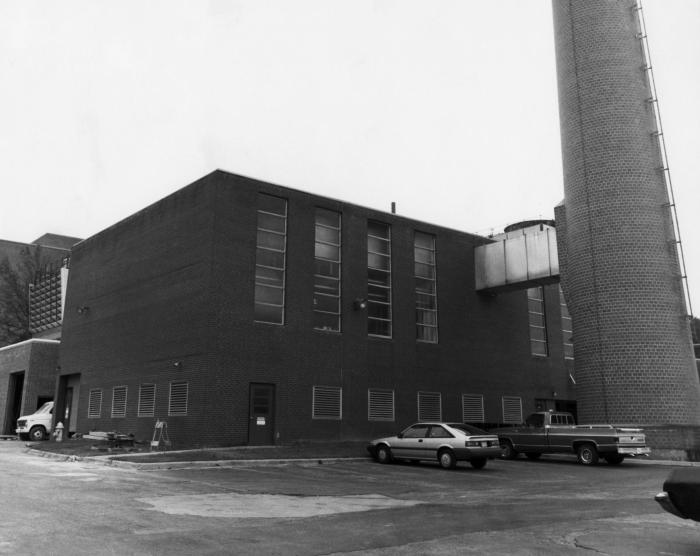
This historic photograph, taken sometime in the 1980s, shows one of the Centers for Disease Control (CDC) power plants at the organization's Clifton Road, Roybal Campus located in Atlanta, Georgia.